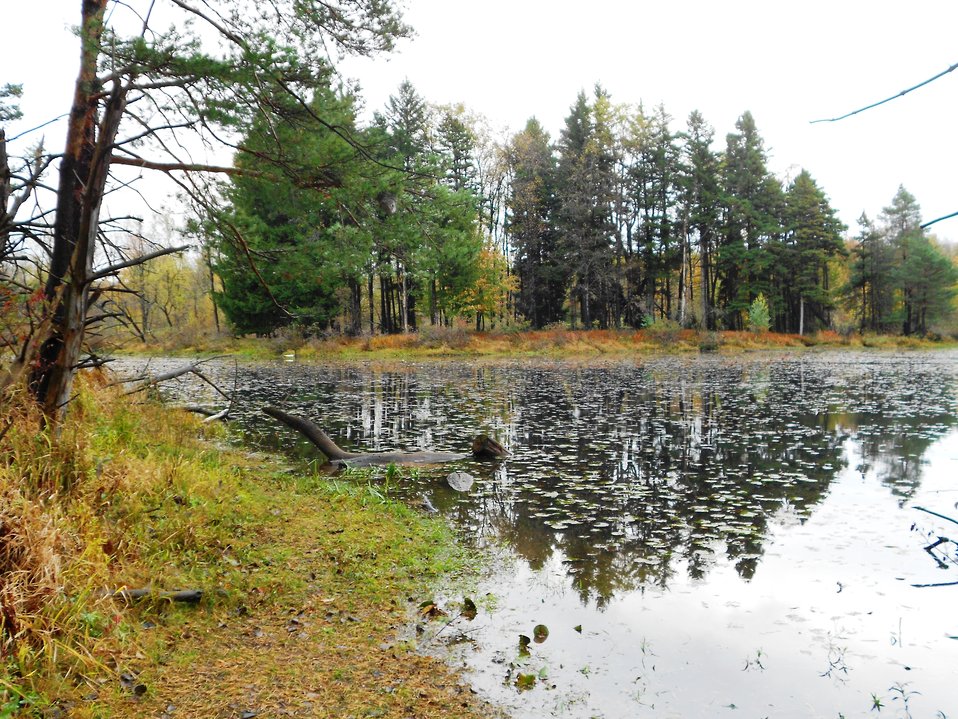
Pond at Reinstein Woods Nature Preserve

Lily pond at Reinstein Woods Nature Preserve